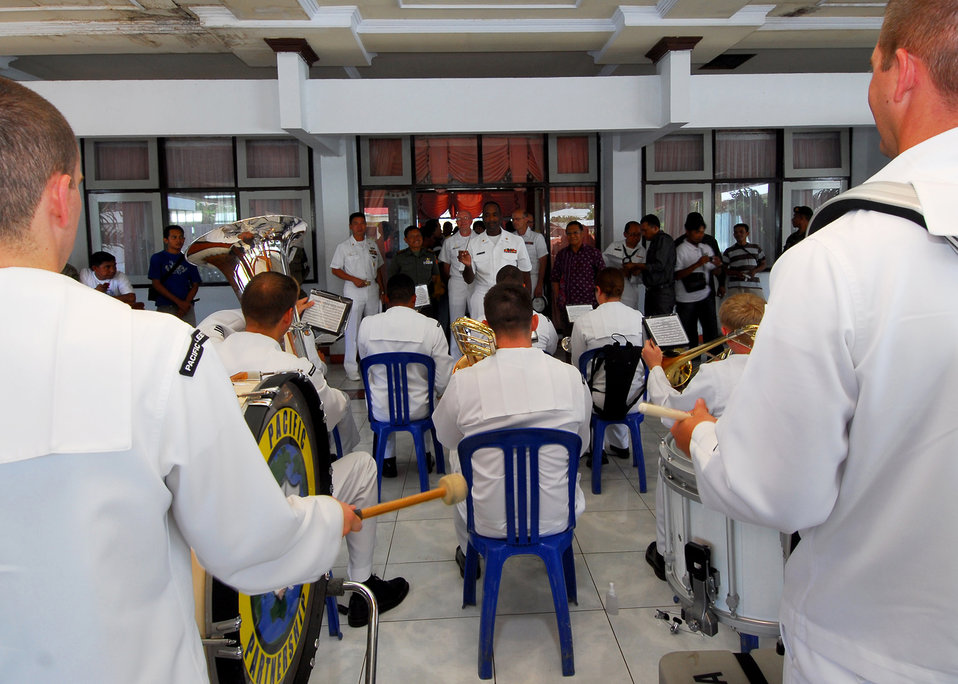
The U.S. Pacific Fleet Band plays during the closing ceremony for the Pacific Partnership 2010 visit to Ternate, Indonesia, on July 24, 2010. The Military Sealift Command hospital ship USNS Mercy (T-AH 19) is in the North Maluku Islands conducting Pacific Partnership 2010, the fifth in a series of annual U.S. Pacific Fleet endeavors conducted in Indonesia as a disaster relief exercise aimed at strengthening regional partnerships.